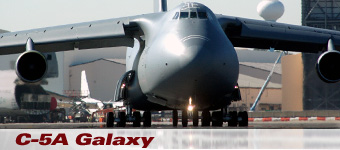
Lt. George E. M. Kelly history spotlight graphic .